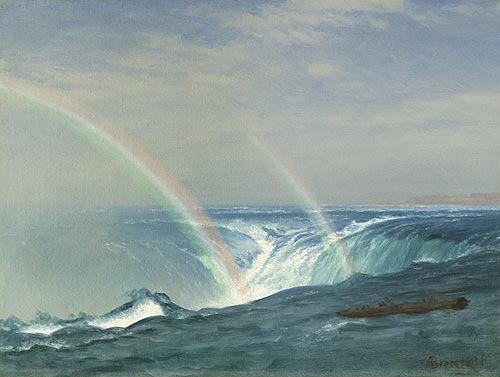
Bierstadt, Albert - Home of the Rainbow, Horseshoe Falls, Niagara